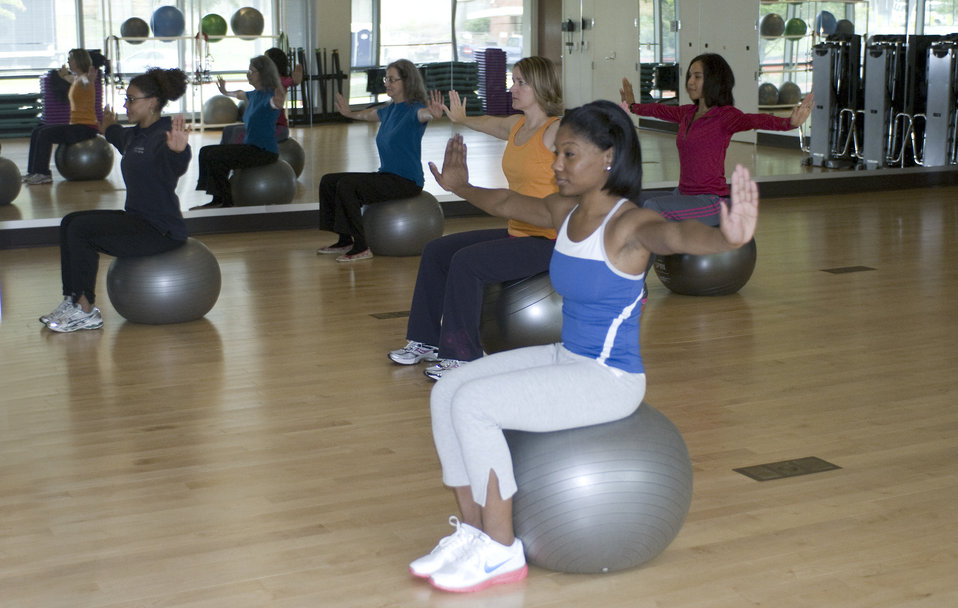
This image was captured on one of the Centers for Disease Control's (CDC) campuses, in the facility's fitness center, where a number of scheduled group classes are provided for employees' health and enjoyment. This particular class was an instructor lead aerobics exercise session, which included the use of an inflatable balance ball, upon which the class attendees were seated. While in a seated position, these female students were performing upper-body stretching exercises.